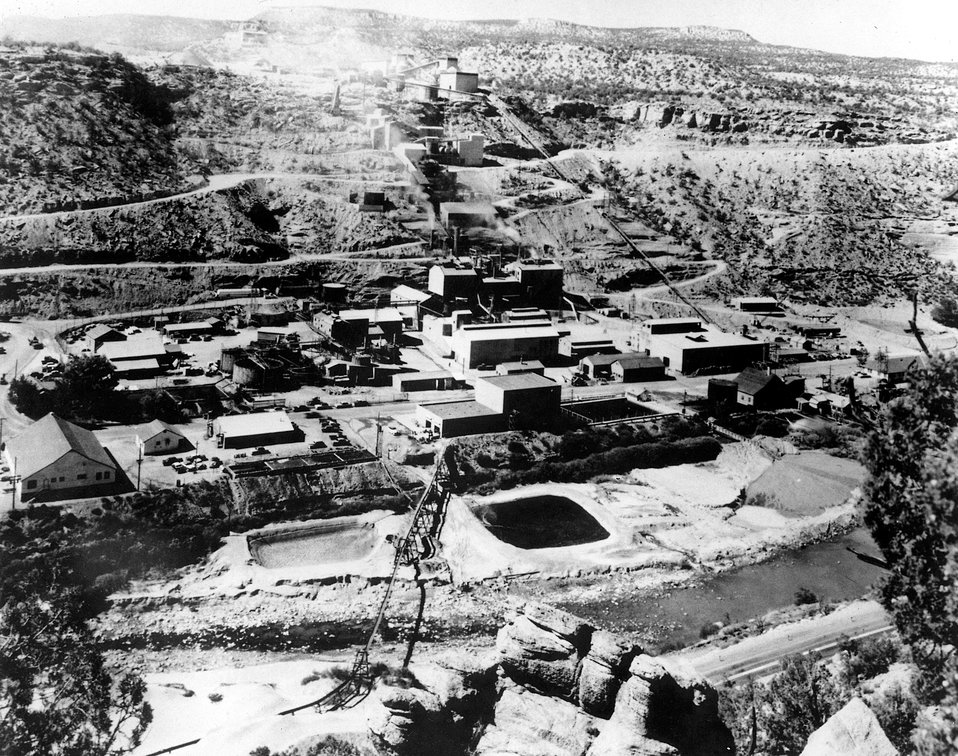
Uranium Mill at Uravan, Colorado. c. 1965